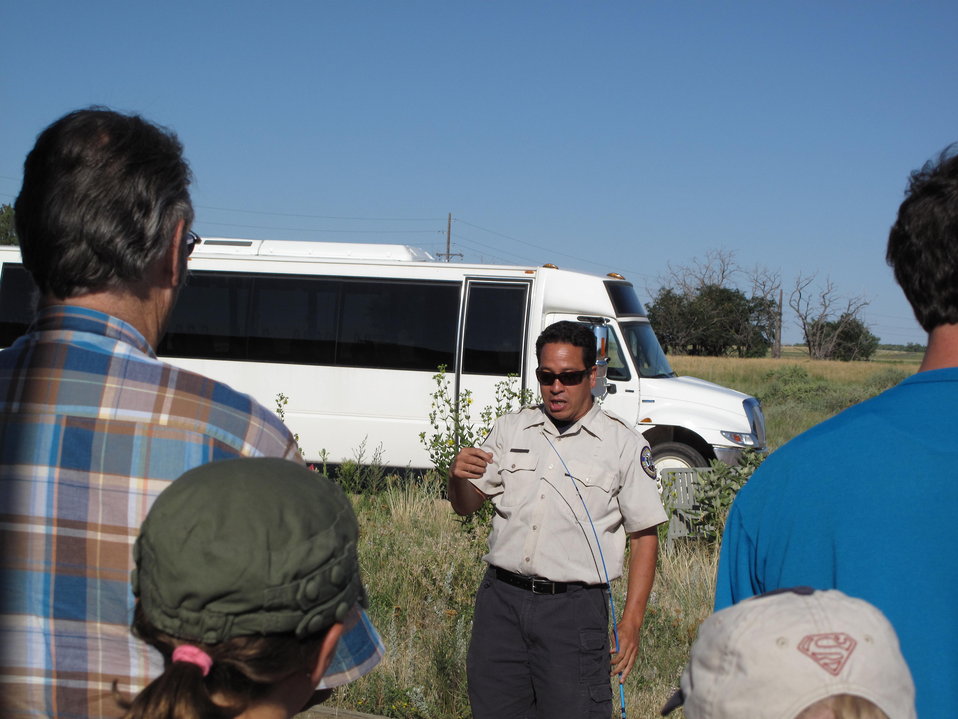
Learning to Hold a Pole

Scott Gilmore (ELK) teaching the children how to hold a fishing pole.